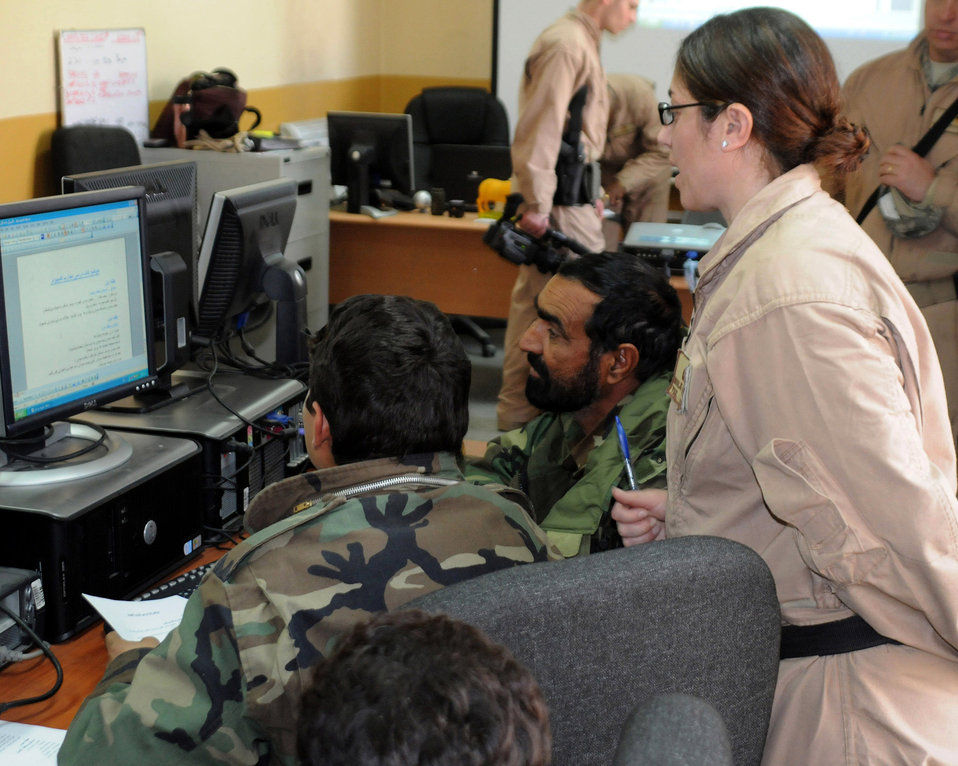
Airmen mentor Afghan national army

Tech. Sgt. Natalie Cerchio gives computer instruction to an Afghan national army colonel Feb. 20 at Kabul, Afghanistan. Sergeant Cerchio, assigned to the 755th Expeditionary Support Squadron, is one of the Airmen mentors who work with ANA soldiers to help them improve upon their logistics skills. Part of the training is to teach them to use computers to track their supplies.